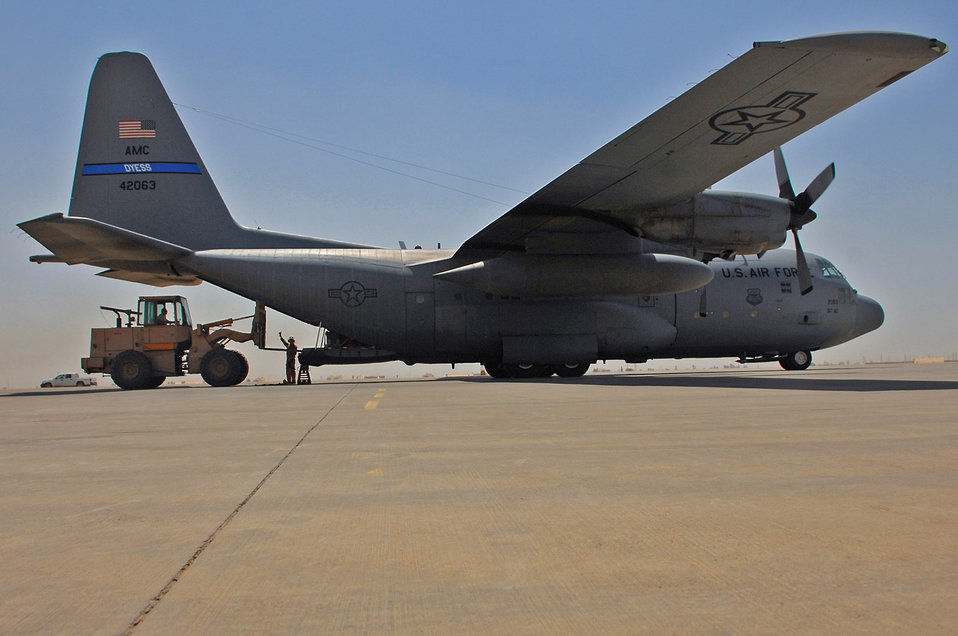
Herculean support for convoys

Cargo is loaded onto a C-130 Hercules May 10 at Balad Air Base, Iraq. Members of the 777th Expeditionary Airlift Squadron help prevented convoy vehicles and servicemembers from traveling along improvised explosive device-laden Iraqi roads by airlifting troops and supplies throughout the area of operations.